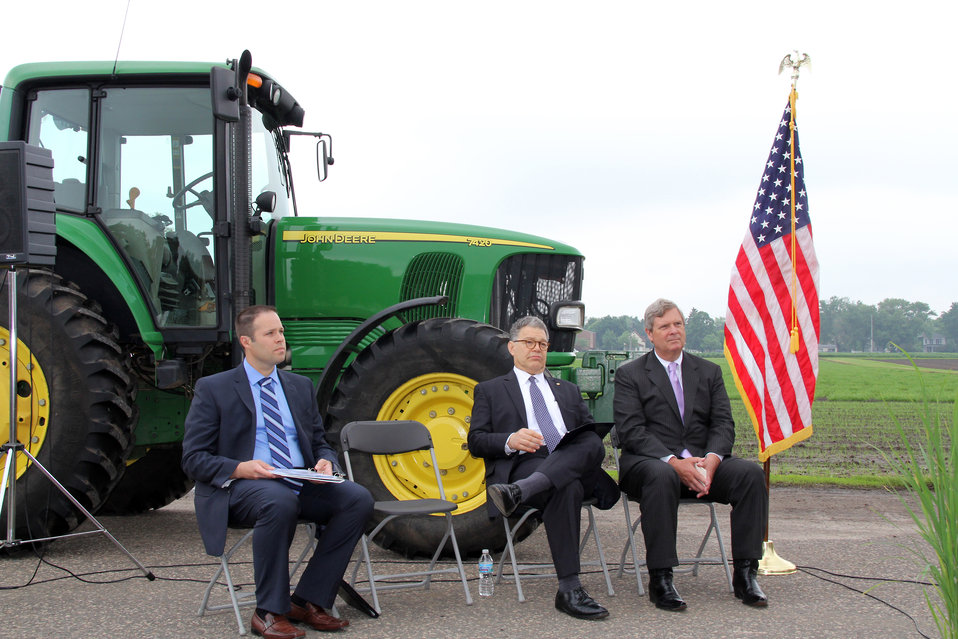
(L to R) Minnesota Department of Agriculture (MDA) Assistant Commissioner Matt Wohlman, U.S. Senator Al Franken (MN), and Agriculture Secretary Tom Vilsack listen to a speaker at the launch of the Minnesota Agricultural Water Quality Certification program held at St. Paul University, St. Paul, MN on Monday, Jun. 10, 2013. This program is the first of its kind in the nation and is the product of a state-federal Memorandum of Understanding (MOU) signed by Minnesota Governor Dayton, Agriculture Secretary Vilsack and former Environmental Protection Agency (EPA) Administrator Lisa Jackson in January 2012.